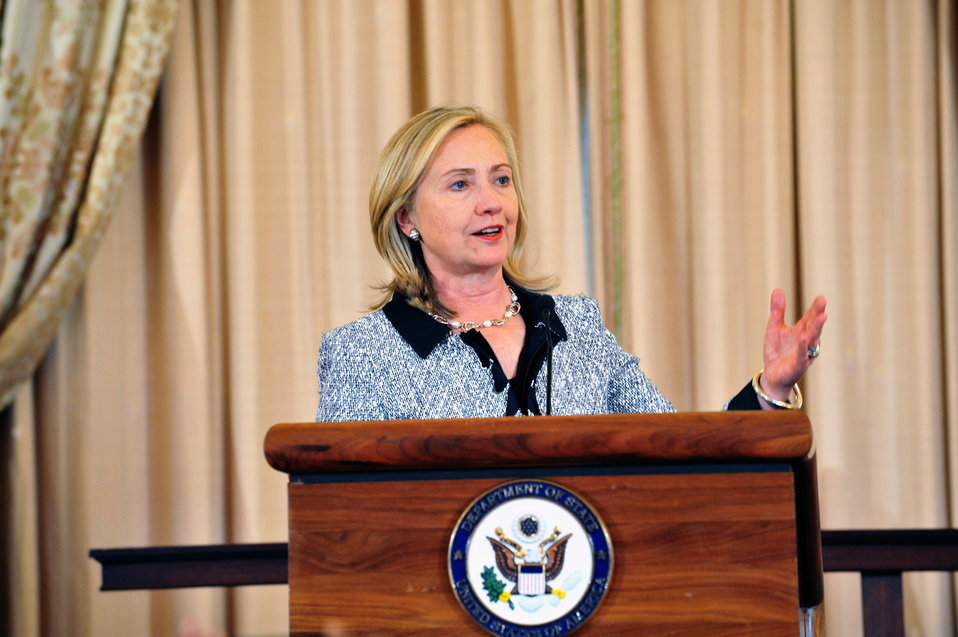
Secretary Clinton Delivers Remarks to African Women Entrepreneurs

U.S. Secretary of State Hillary Rodham Clinton delivers remarks to 40 women entrepreneurs from 36 African nations participating in the 2011 African Women's Entrepreneurship Program at the U.S. Department of State in Washington, D.C., on October 3, 2011.